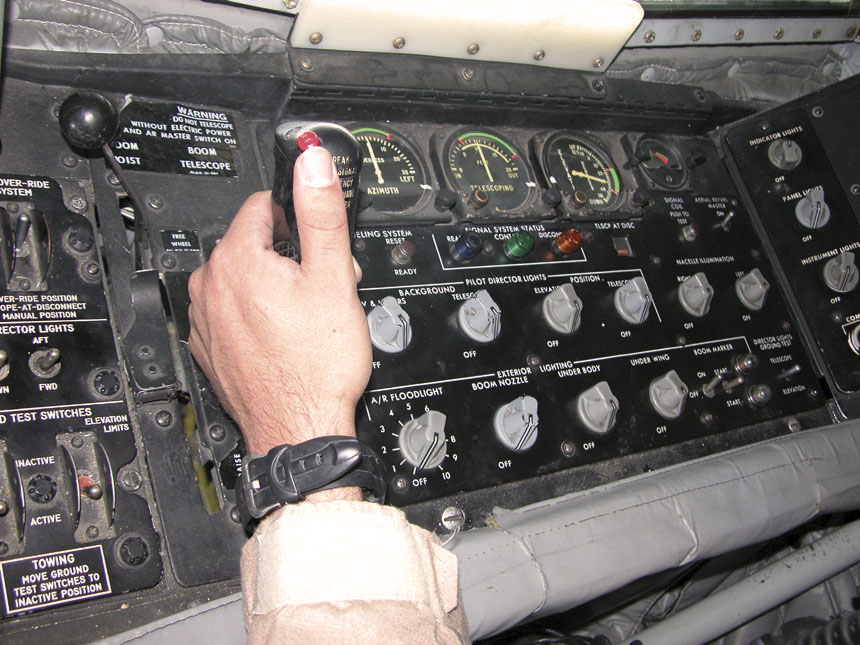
Airmen deliver fuel in flight

SOUTHWEST ASIA -- Staff Sgt. Jonny Gomez works the control panel of a KC-135 Stratotanker as he unloads fuel into a B-52 Stratofortress. He is a boom operator with the 340th Expeditionary Air Refueling Squadron at a forward-deployed location.